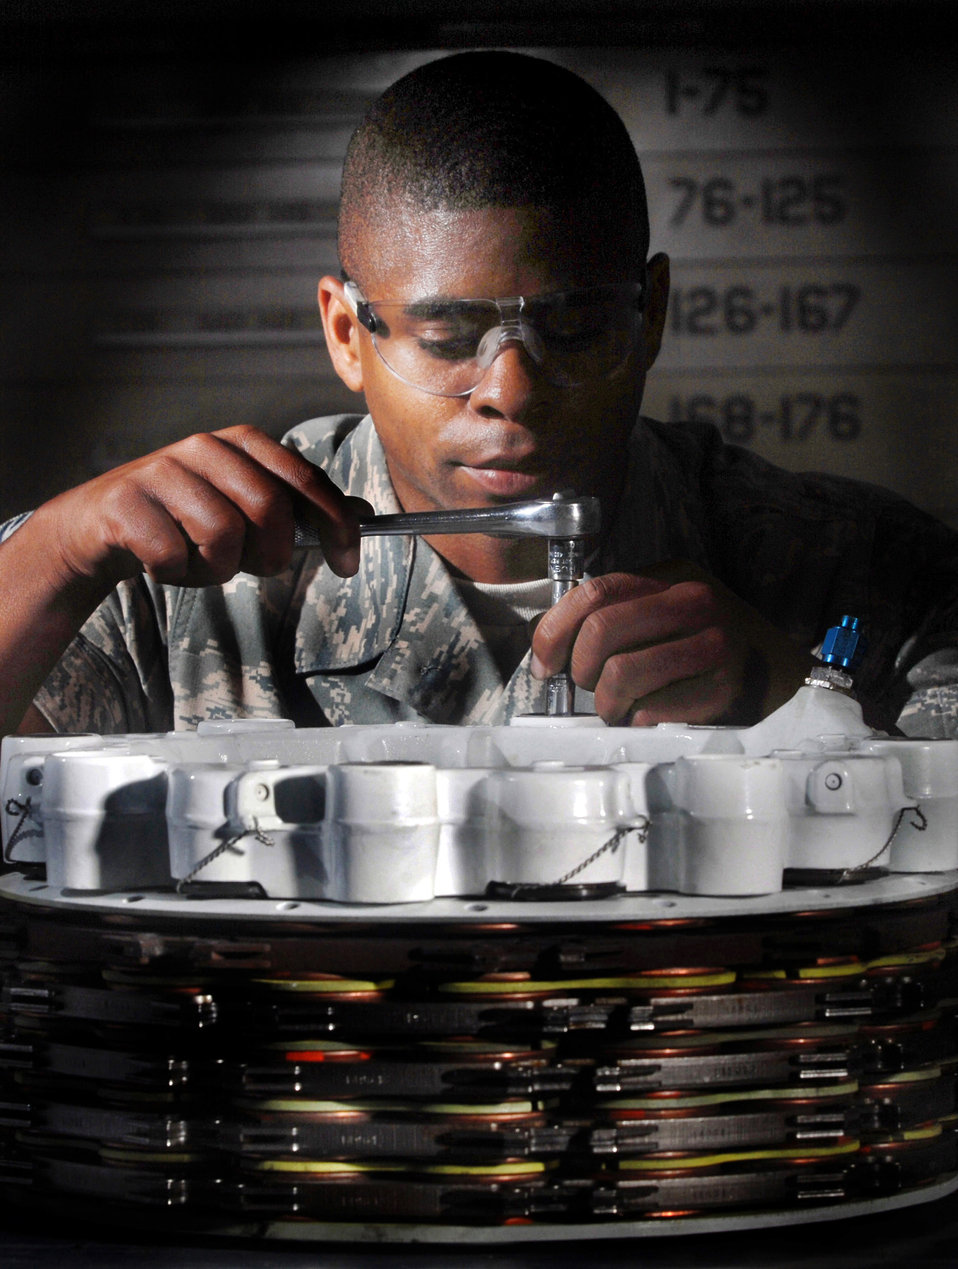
Tighten up

Tech. Sgt. Alan L. Scott tightens a bolt on KC-135 Stratotanker brake assembly July 30 at March Air Reserve Base, Calif. March ARB, located in Southern California, is home to the largest air mobility wing in the Air Force Reserve Command. It is also home to units from the Army Reserve, Navy Reserve, Marine Corps Reserve and Air National Guard. Sergeant Scott is a pneudraulics technician from the 452nd Maintenance Squadron.